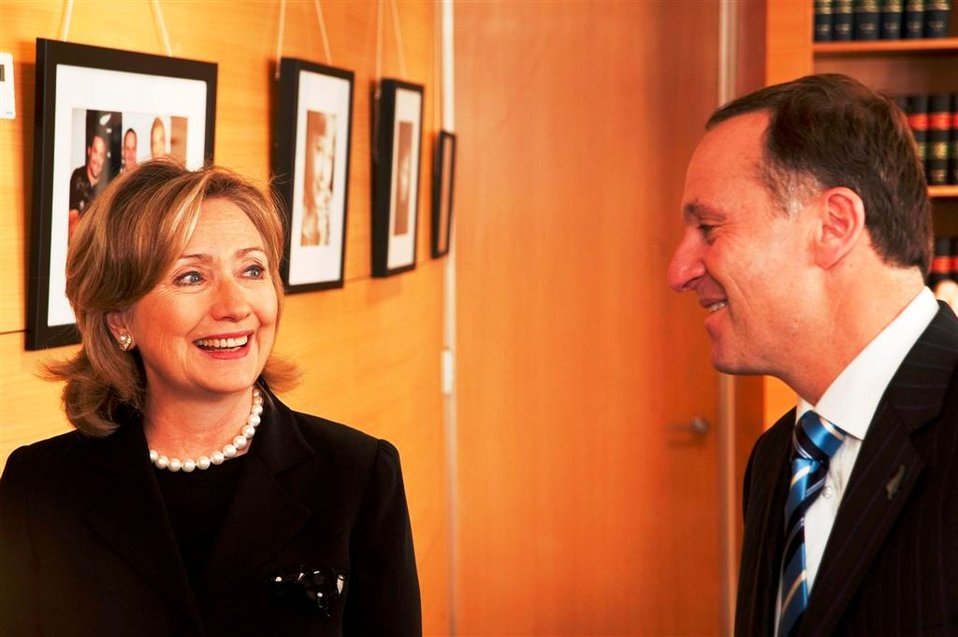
Secretary Clinton Speaks With New Zealand Prime Minister Key

U.S. Secretary of State Hillary Rodham Clinton speaks with New Zealand Prime Minister John Key in the Prime Minister's office in Wellington, New Zealand, on November 4, 2010.